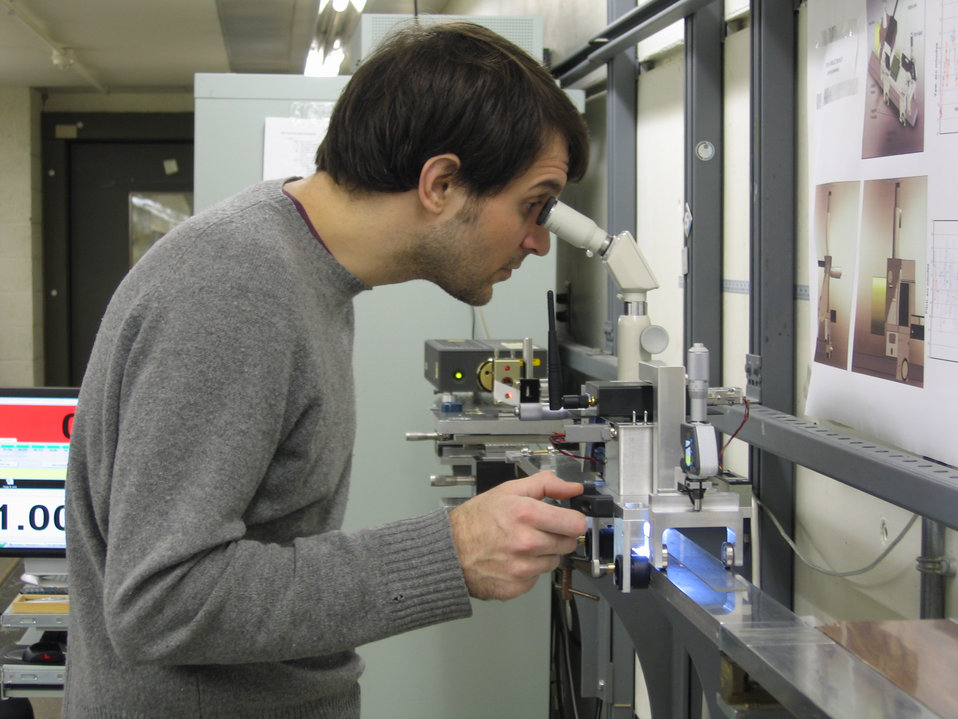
Christopher Blackburn

NIST technician Christopher Blackburn uses a microscope to precisely align a retroreflector over the center of a hash mark on a measuring tape.